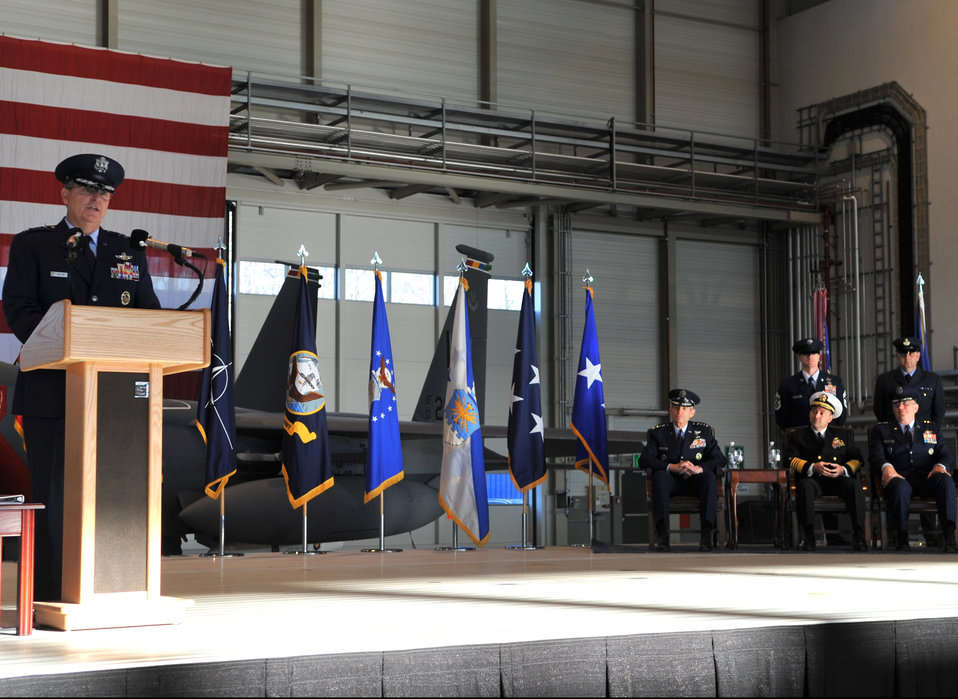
Gen. Mark A. Welsh III takes command of USAFE

Gen. Mark A. Welsh III speaks to those in attendance after accepting command of U.S. Air Forces in Europe during a change of command ceremony Dec. 13, 2010, at Ramstein Air Base, Germany. Gen. Roger A. Brady relinquished command of USAFE during the ceremony after providing command and control for air, space and missile defense for activities in an area of operations covering almost one-fifth of the globe which included 51 countries in Europe, Asia, the Middle East, and the Arctic and Atlantic oceans.